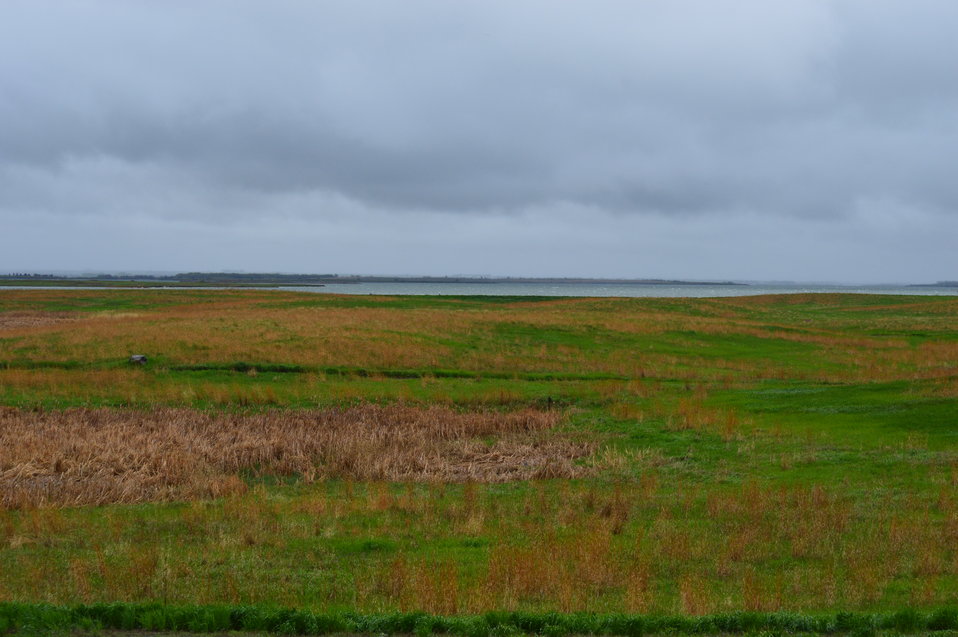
Landscape seen from auto tour route

The 8 mile route begins near the visitor center and winds along the scenic south shoreline of Lake Audubon. Highlights include views of the lake, prairie wetlands, grasslands, and a chance to observe many species of animals and plants.